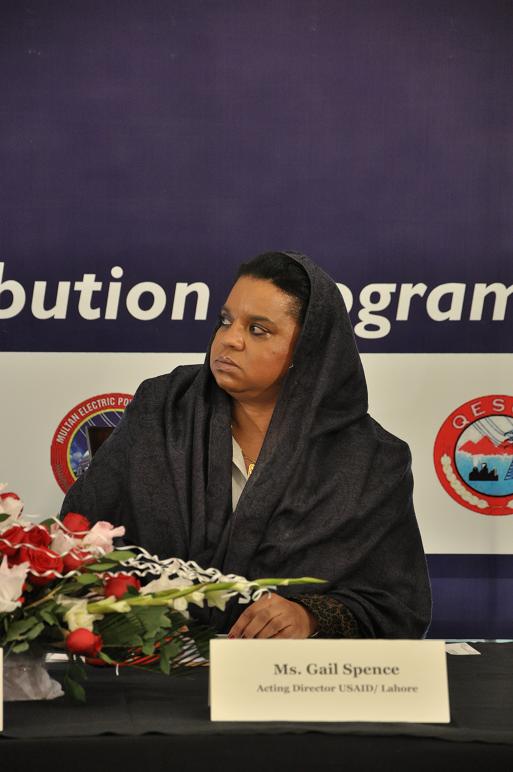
Chief Guest Gail Spence (Deputy Director USAID Punjab)